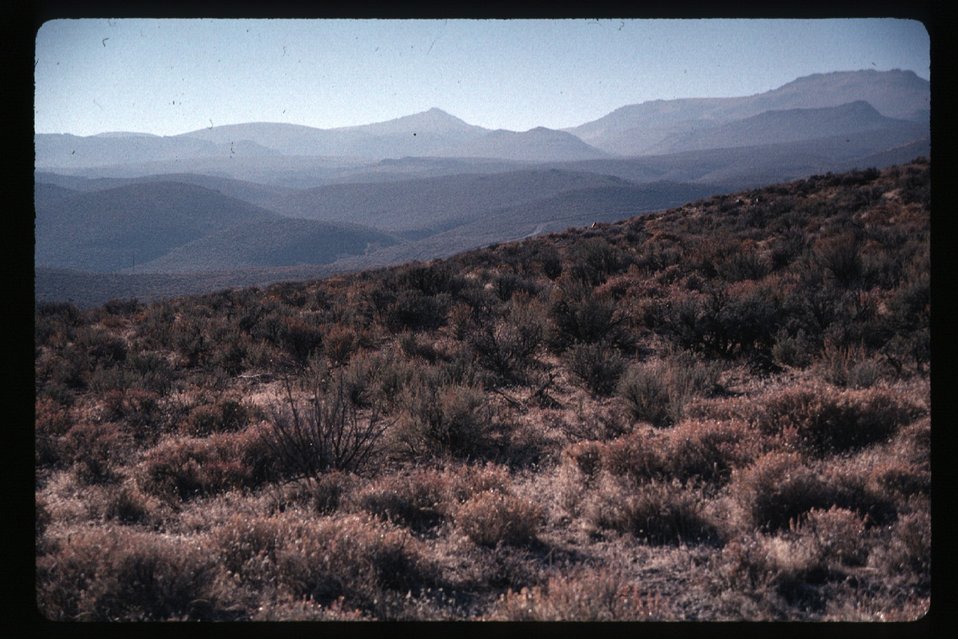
Wild Horse and Burro Adoption Program Range Four Rivers Field Office LSRD Lower Snake River District